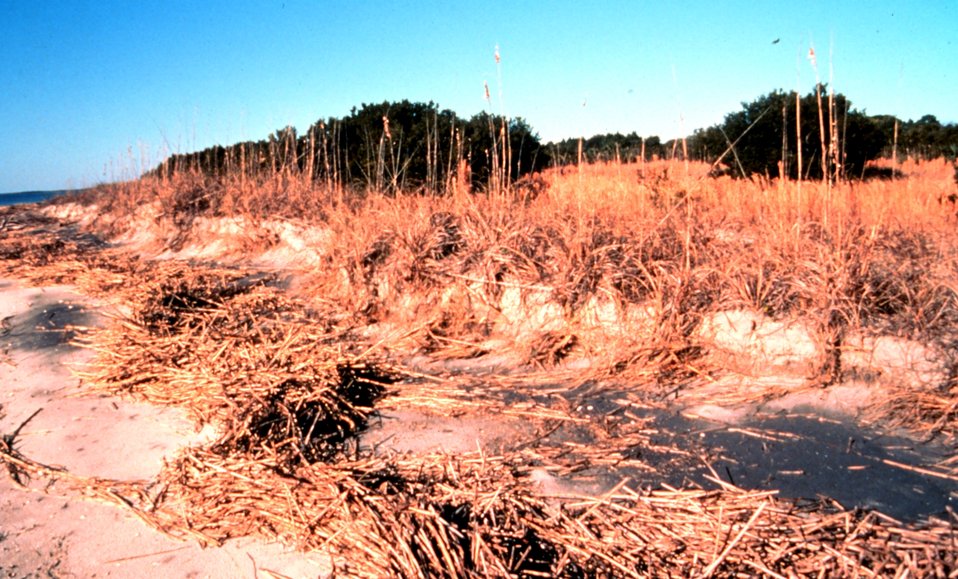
ACE Basin National Estuarine Research Reserve. Sand dunes on Otter Island.